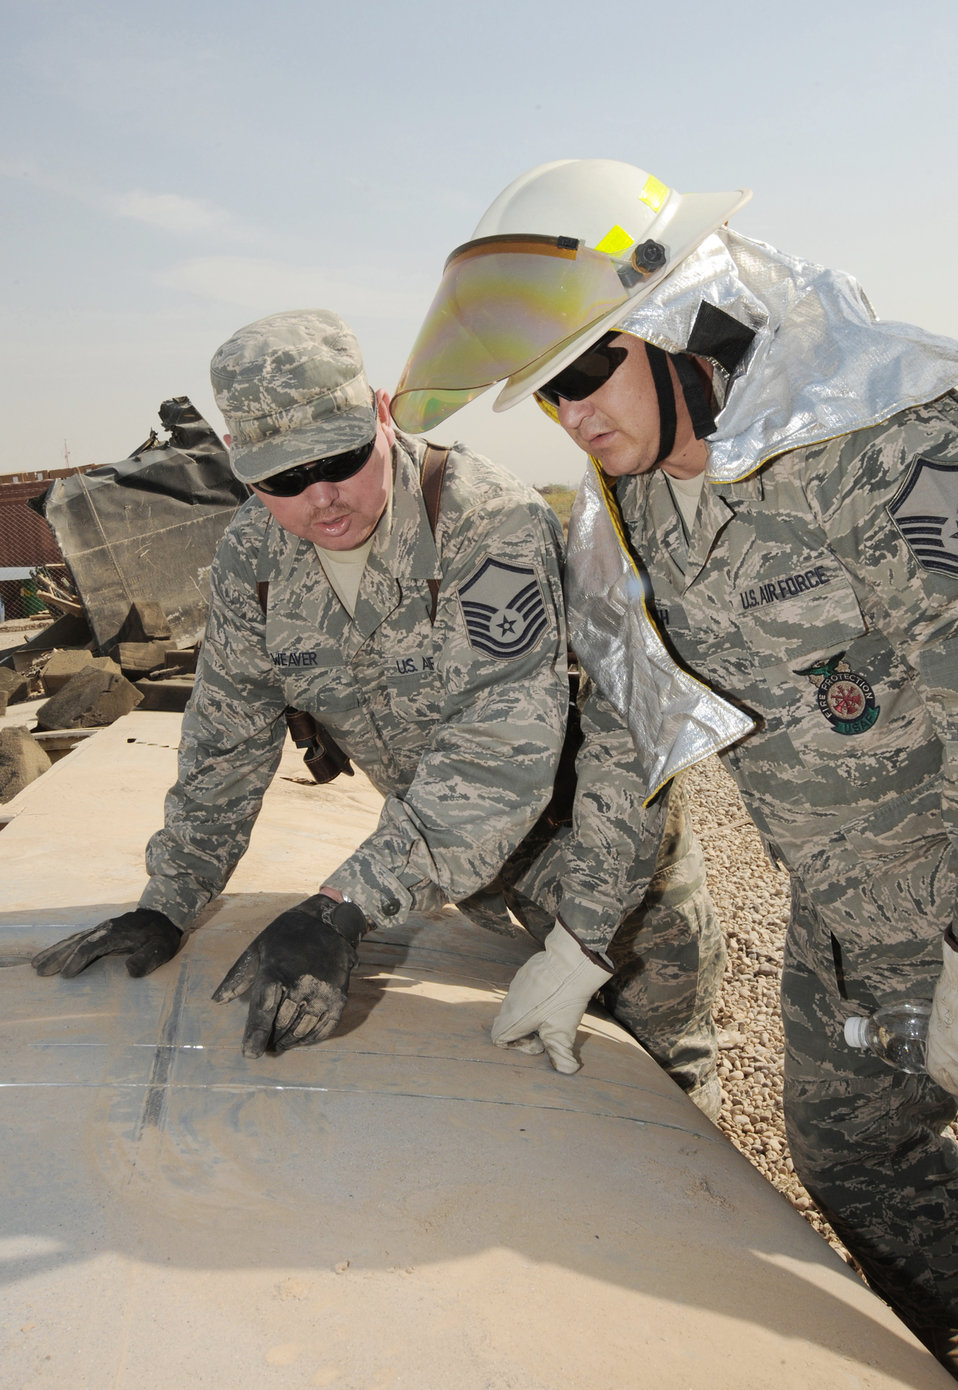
One Airman?s trash is other Airman?s training aid

Master Sgt. Dellet Weaver (left) and Master Sgt. Marty Smith discuss how to remove the wing from a C-130 Hercules Oct. 27, 2009, at Sather Air Base, Iraq. The aircraft is believed to have been destroyed years ago after it crashed short of a runway outside the wire, without casualties. Several American and Iraqi airmen are working together to salvage parts for use as hands-on training aids for Iraqi aircraft maintainers at New Al Muthana Air Base. Sergeant Weaver is the production superintendent for aircraft maintenance advisers assigned to the 321st Air Expeditionary Advisory Group. He is deployed from Little Rock Air Force Base, Ark. and hails from Grafton, W.Va. Sergeant Smith is the assistant fire chief assigned to the 447th Expeditionary Civil Engineer Squadron and is deployed from the 132nd Fighter Wing of the Iowa Air National Guard. He is a native of Ankeny, Iowa.